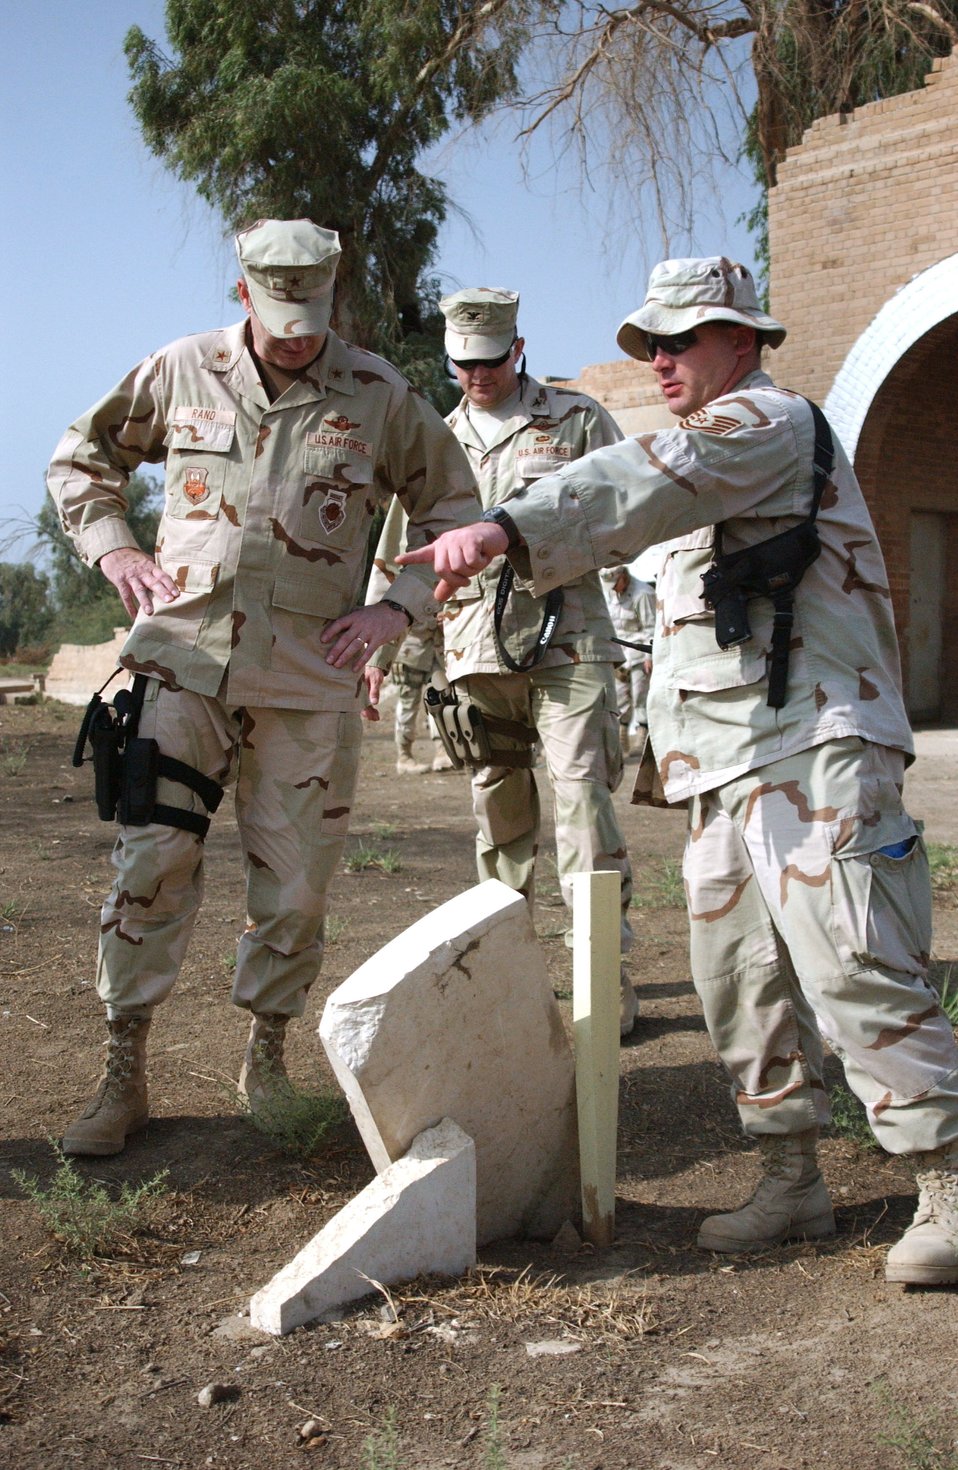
Camp Habbaniyah

Tech. Sgt. James Lovelace briefs his responsibilities as a civil engineer technician Nov. 27 to Brig. Gen. Robin Rand the 332nd Air Expeditionary Wing commander at Camp Habbaniyah, Iraq. Sergeant Lovelace is with the 732nd Expeditionary Regional Support Unit.